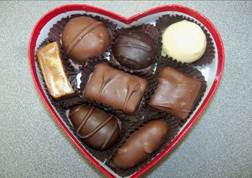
RECALLED – Assorted chocolates

February 20, 2014 – Fannie May Issues A Voluntary Recall Of Its 4.0 Oz. Heart-shaped Box Of Assorted Chocolates Due To Undeclared Peanuts.